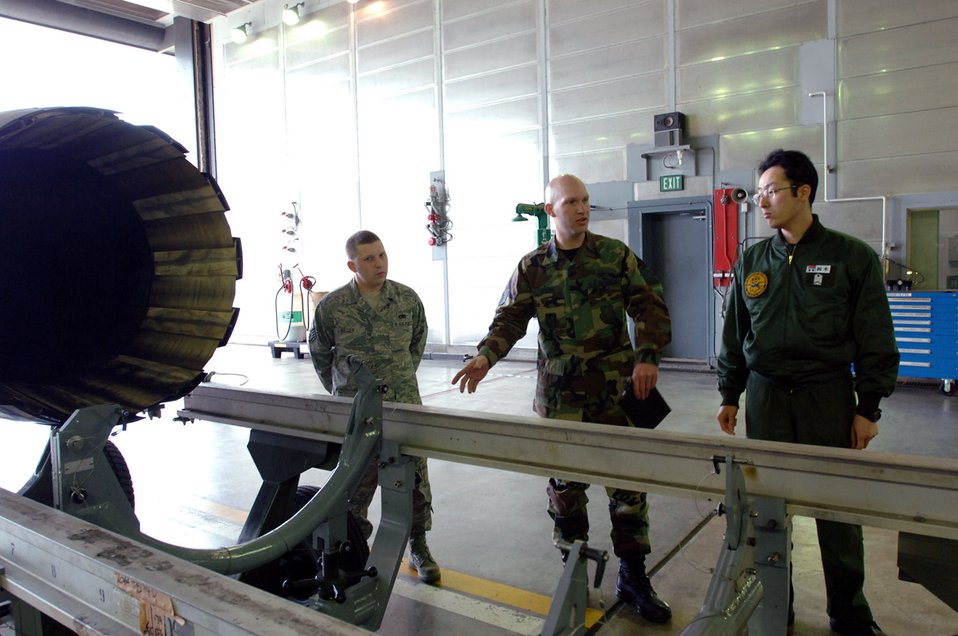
U.S., Japan forces join together for bilateral exchange

Staff Sgt. Joseph Bilger (left) and Tech. Sgt. Marcus Sydow (center) introduce Japanese Air Self Defense Force Staff Sgt. Masanobu Suzuki to some of their equipment May 15 at Misawa Air Base, Japan. The purpose of this bilateral exchange is to build friendships and learn the differences between both forces within the same job. Sergeant Bilger is a 35th propulsion flight jet engine mechanic, and Sergeant Sydow is the 35th propulsion shop nonpowered age NCO in charge.